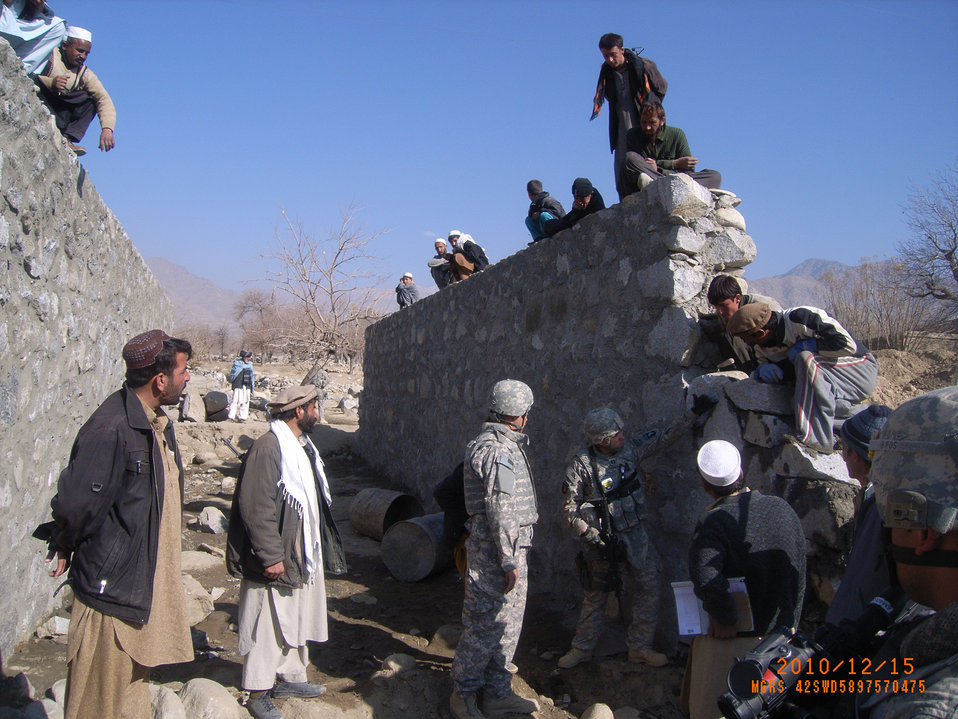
Engineer or teacher?

Capt. Brandon Rocker instructs local contractors how to properly submit bid packages for U.S. construction contracts May 12, 2011, in Kapisa, Afghanistan. Captain Rocker is an engineer and contracting officer representative with the Provincial Reconstruction Team Kapisa.